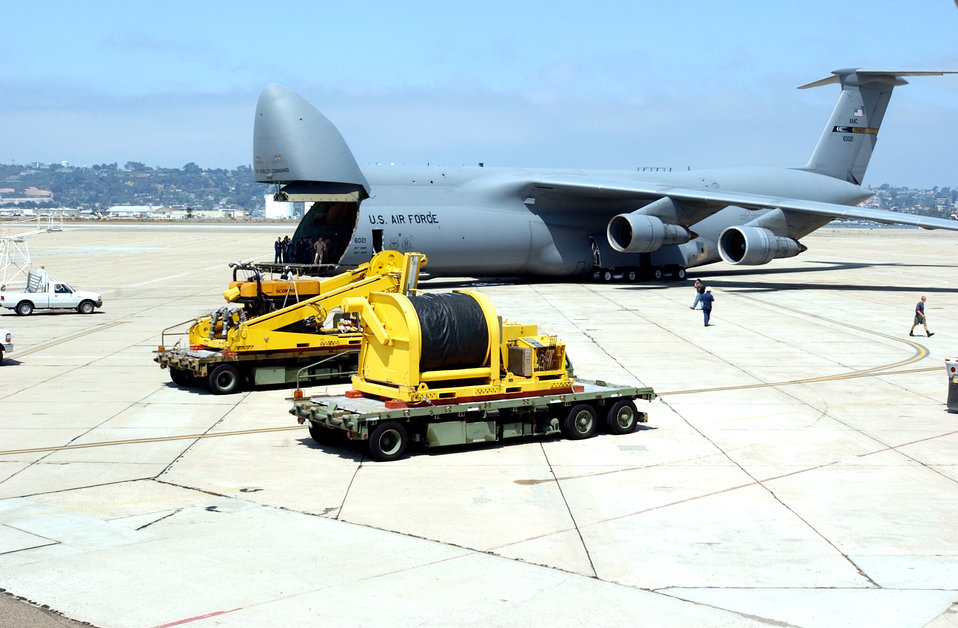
AMC answers call to help rescue Russian sailors

SAN DIEGO -- A C-5 Galaxy assigned to Travis Air Force Base, Calif., is loaded with people and equipment from the Deep Submergence Unit, Naval Base Coronado. The C-5 is bringing two Super Scorpio robotic rescue vehicles to Russia to assist in the rescue of seven Russian sailors trapped in a minisubmarine off the Kamchatka peninsula.